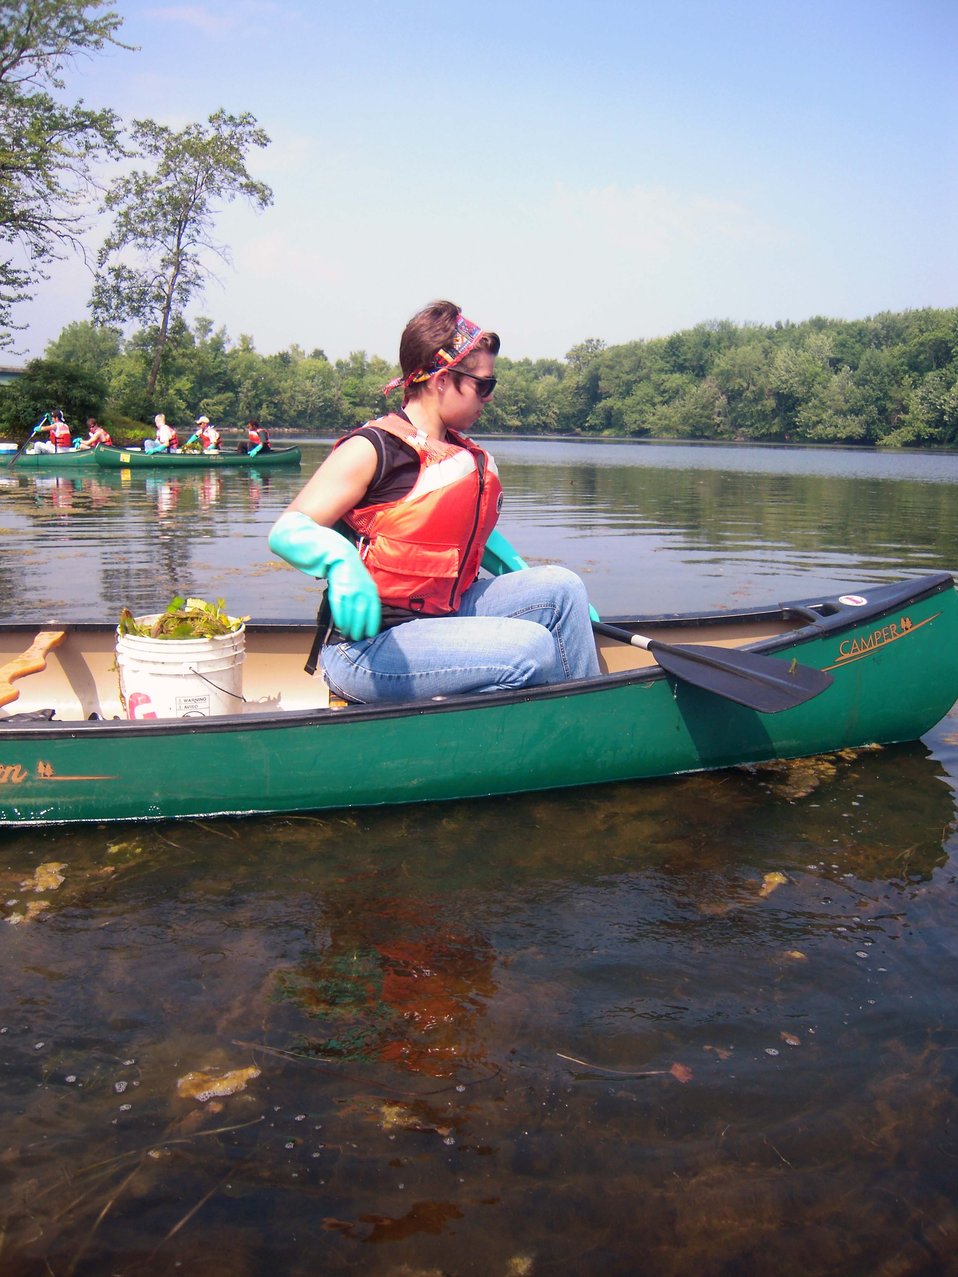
YCC crew removing water chestnut in the